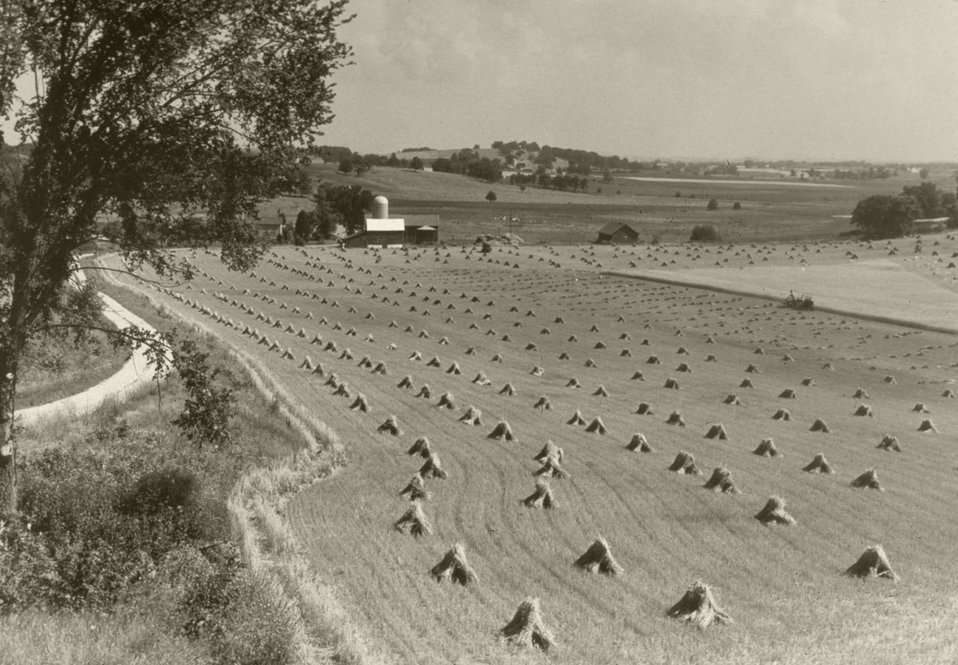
A scenic farm in Jefferson Co., Wisconsin.